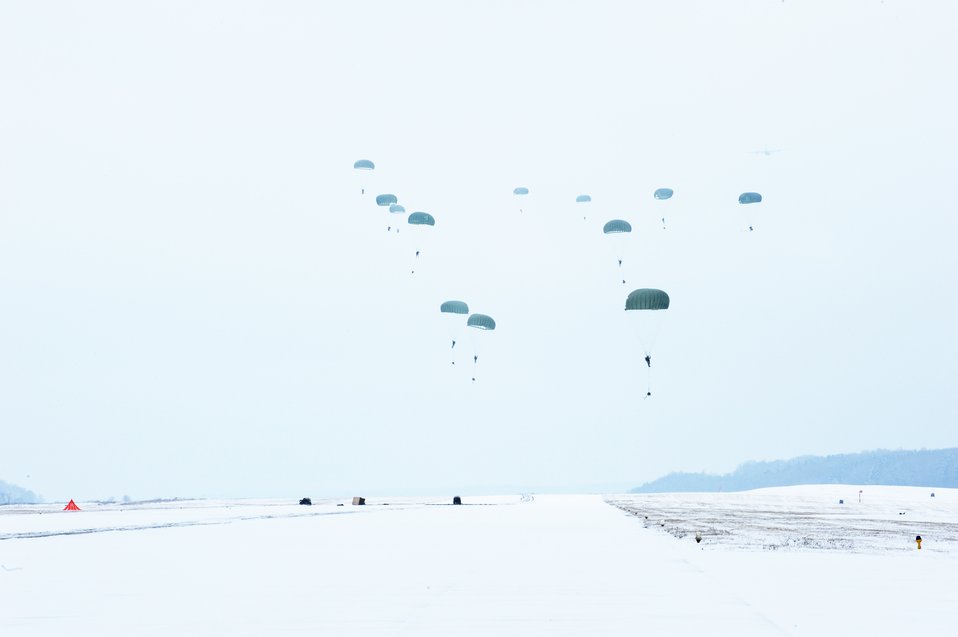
Ramstein forces practice air insertion

Airmen from the 435th Security Forces Squadron at Ramstein Air Base, Germany, conduct an airborne insertion mission at Bitburg Airport Jan. 25, 2010, in preparation of Ramstein's operational readiness inspection in September. The unit is setting up bare-base operations as part of the dual-wing operational readiness exercise with the 86th Airlift Wing.